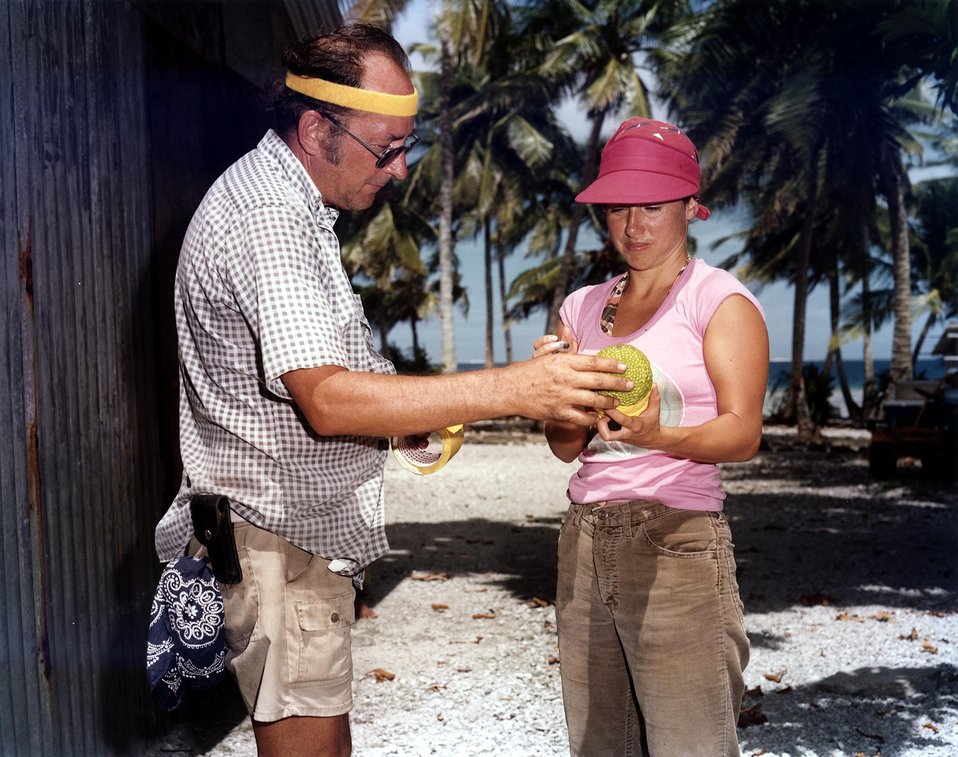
'France closes nuclear reactor'.